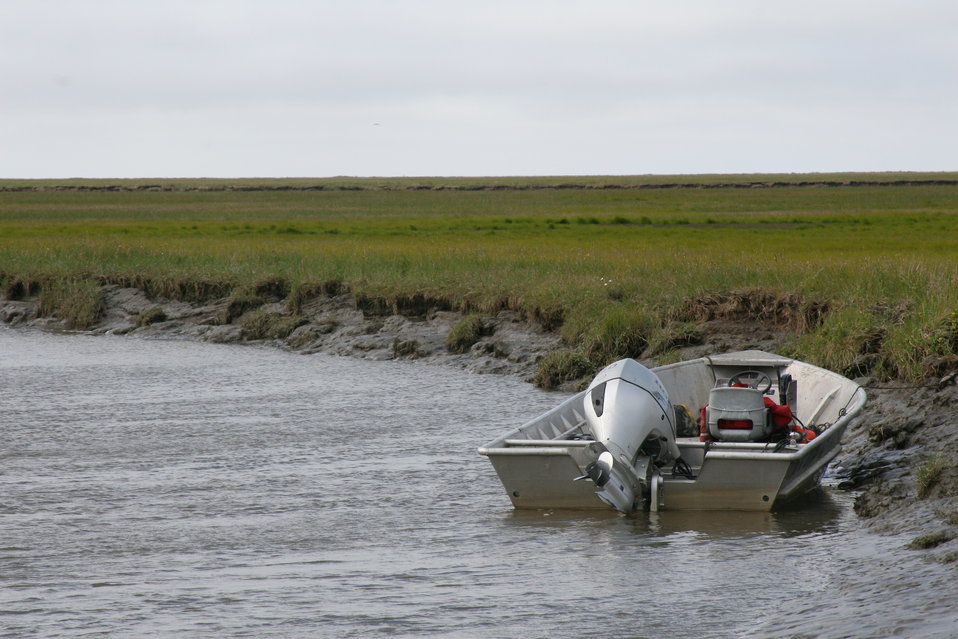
Boats are a huge part of many of our field camps. They provide transportation, haul gear, and help to push birds to trapping sites.

USFWS Yukon Delta NWR